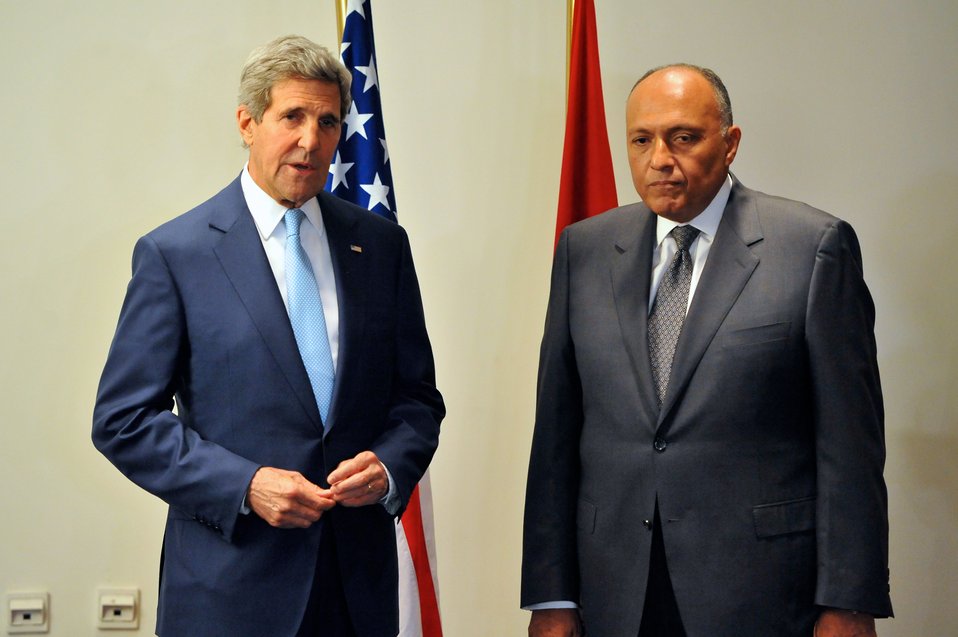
Secretary Kerry Meets With New Egyptian Foreign Minister Shoukry in Cairo

U.S. Secretary of State John Kerry addresses reporters at the outset of a meeting with the newly installed Egyptian Foreign Minister Sameh Shoukry in Cairo, Egypt on June 22, 2014.